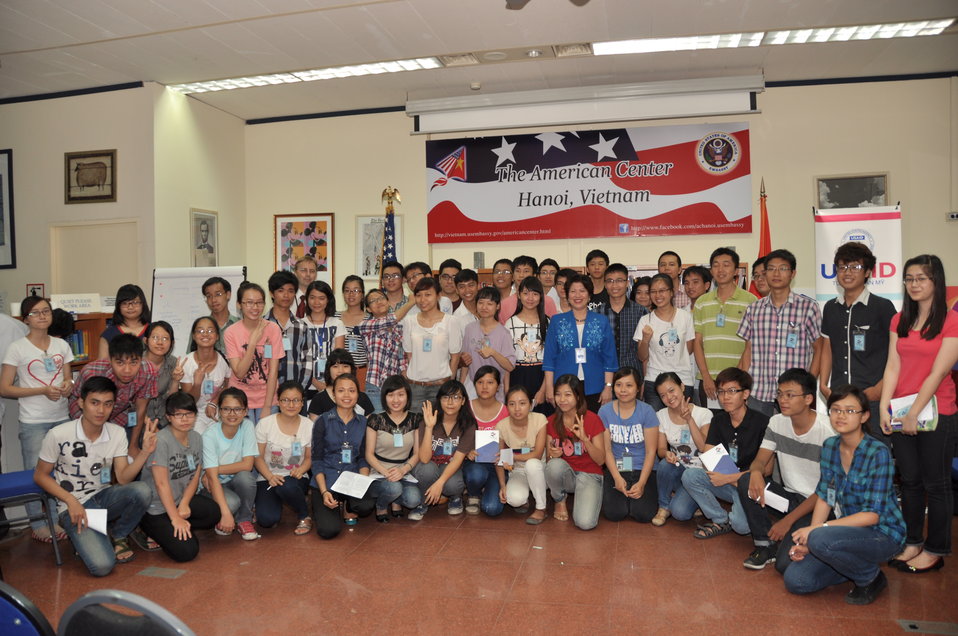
Climate Change Talk at the American Center

Hanoi, May 28, 2013.